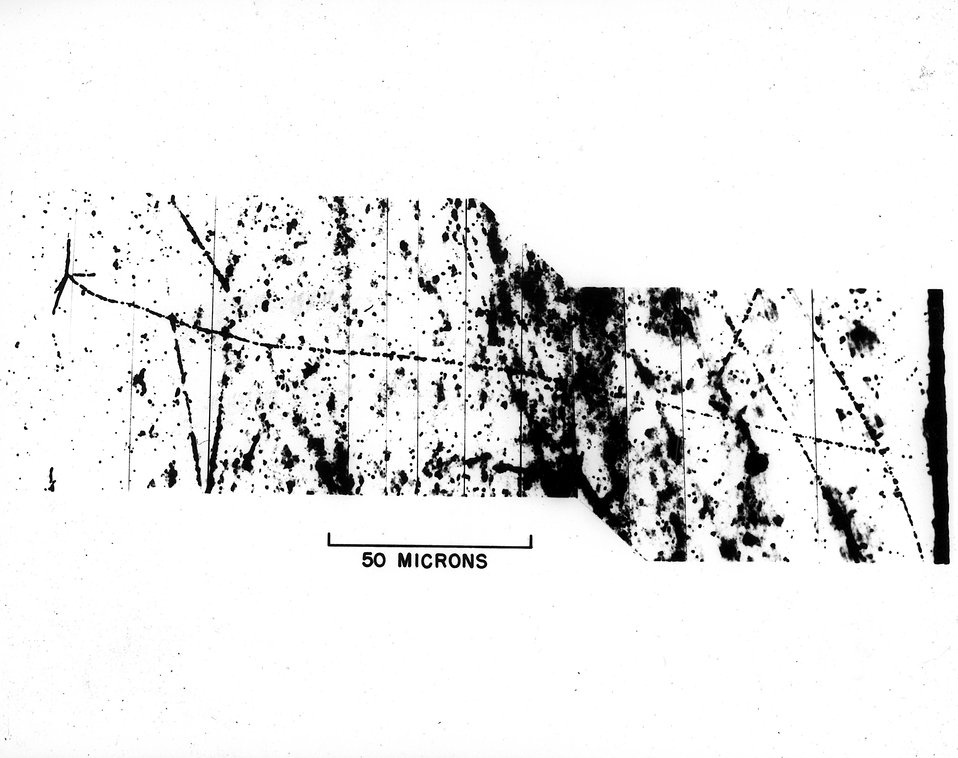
photo micro graph of the path of a meson